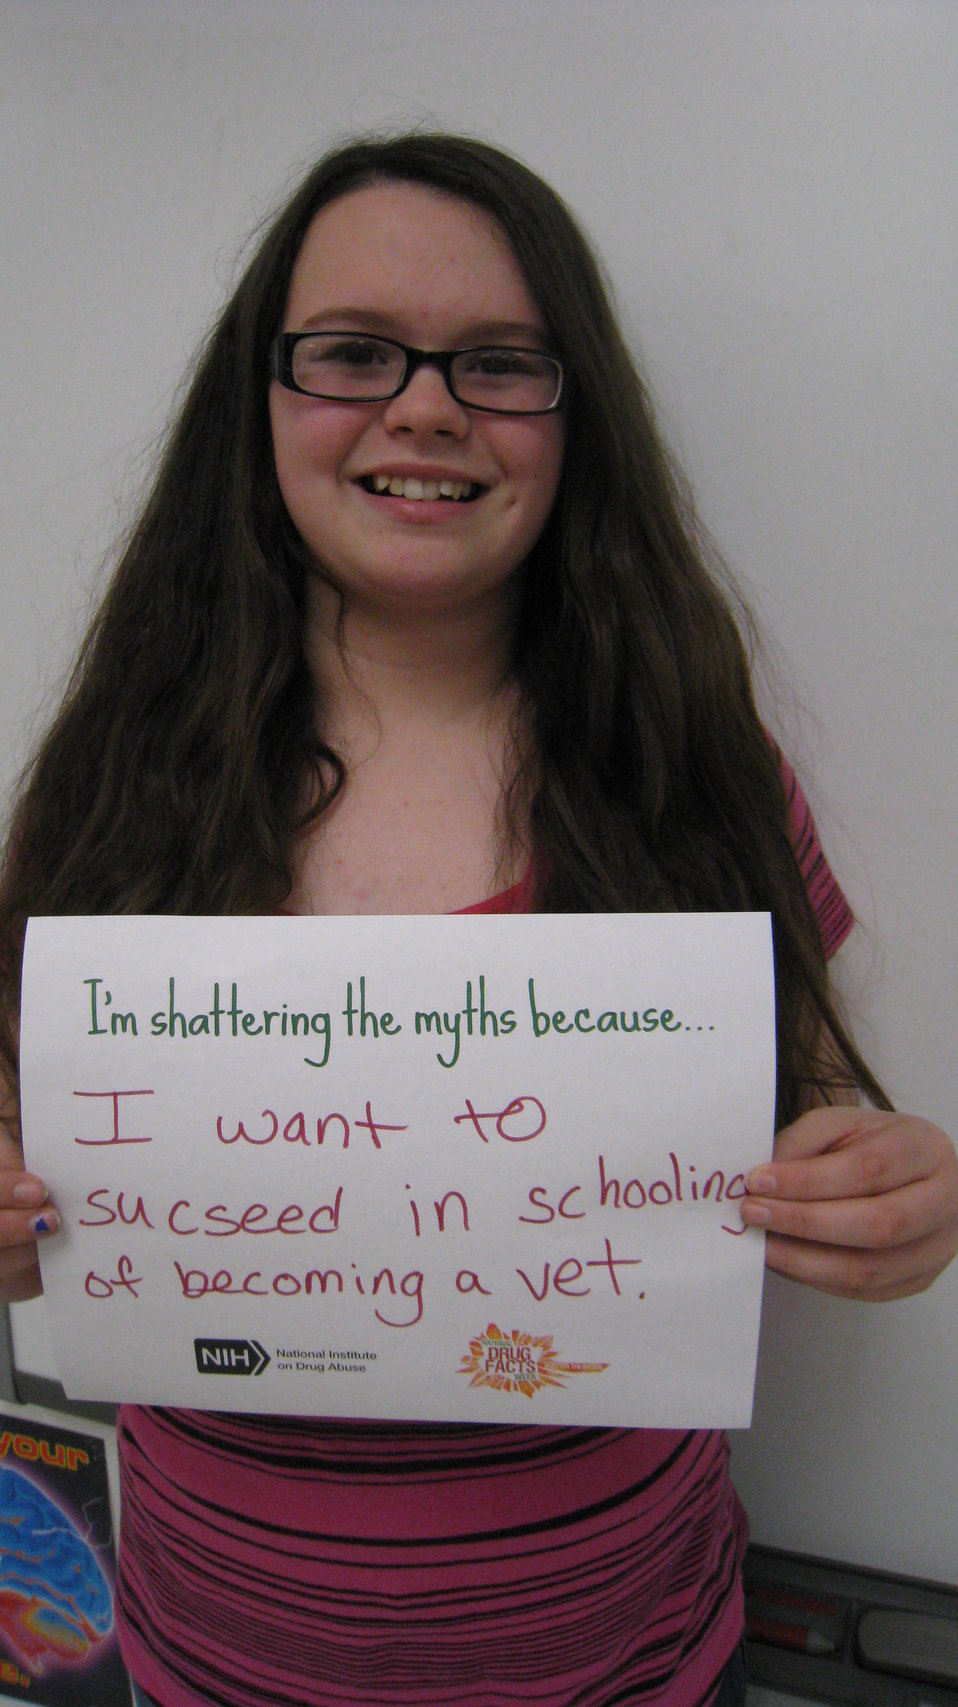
I'm Shattering the Myths Because...

Teenagers from the Van Buren County SAFE Coalition's, Youth Leadership Council (YLC) in Keosauqua, Iowa participate in various events during National Drug Facts Week, 2014.